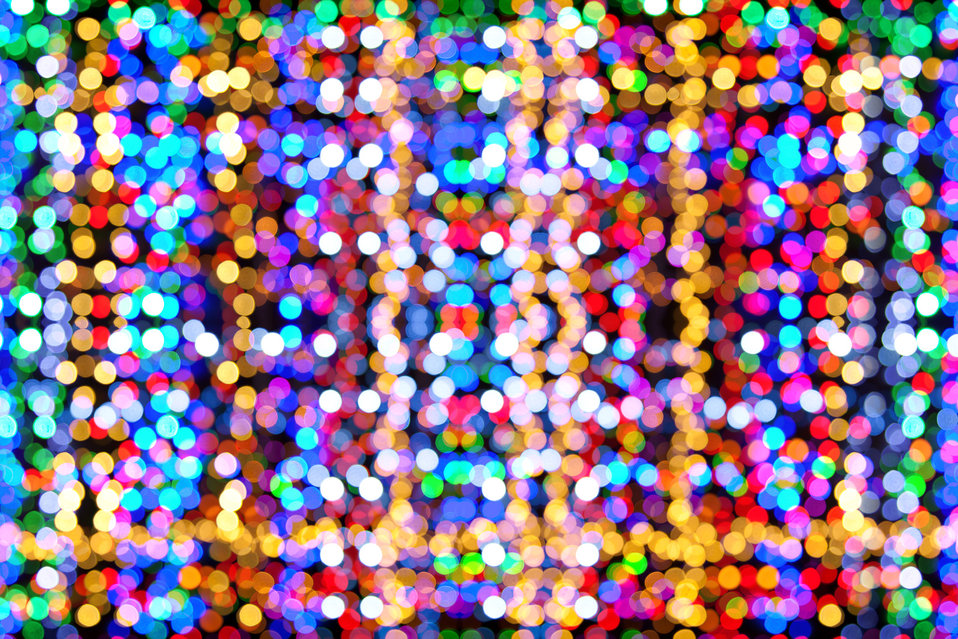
Colorful blurred lights

Thousands of blurred colorful lights.